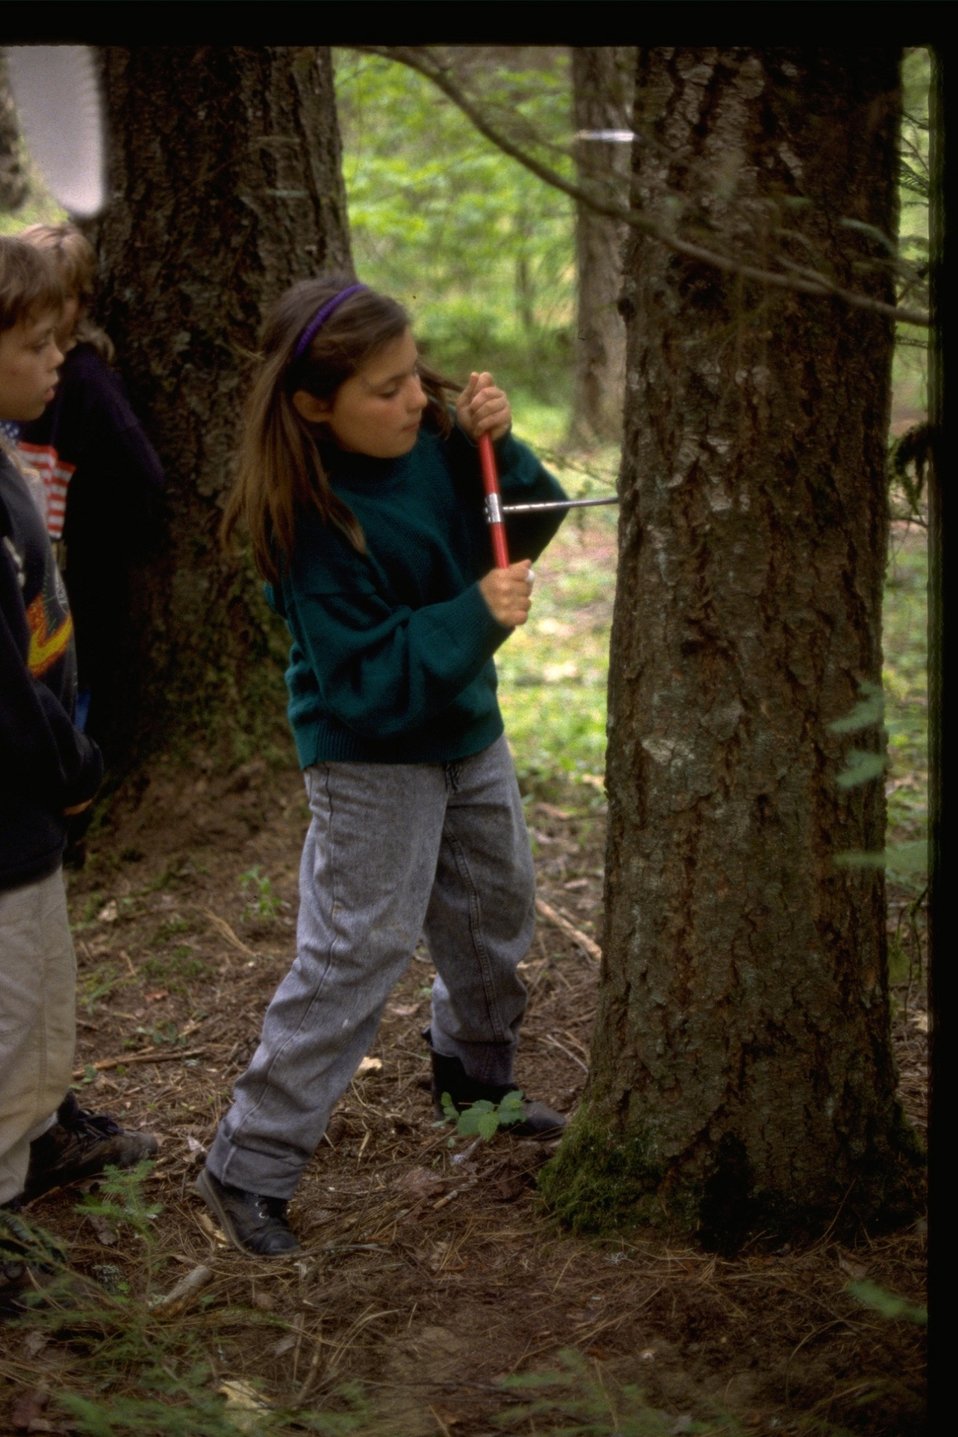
Students at Wolf Creek Elementary are taught environmental education.